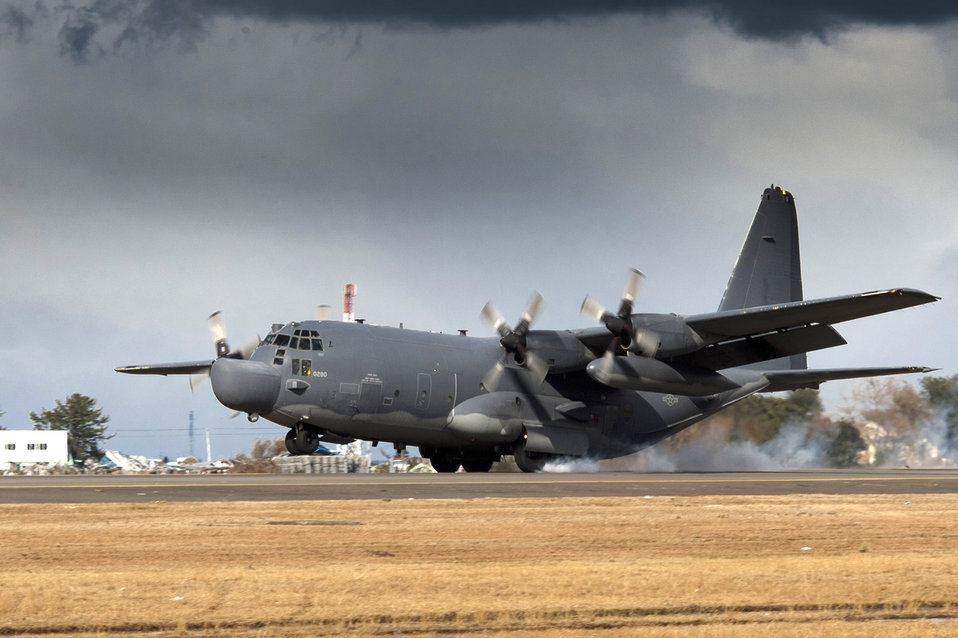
First fixed-wing aircraft since quake lands at Sendai Airport

An MC-130H Combat Talon II lands March 16, 2011 at Sendai Airport, Japan. This is the first fixed-wing aircraft to land at the airport since an earthquake and tsunami crippled much of the Japanese eastern seaboard March 11. A team of combat controllers from the 320th Special Tactics Squadron, out of Kadena Air Base, Japan, along with Japanese emergency management organizations, cleared a section of the runway and re-established the control tower to direct flights in and out of the airfield.